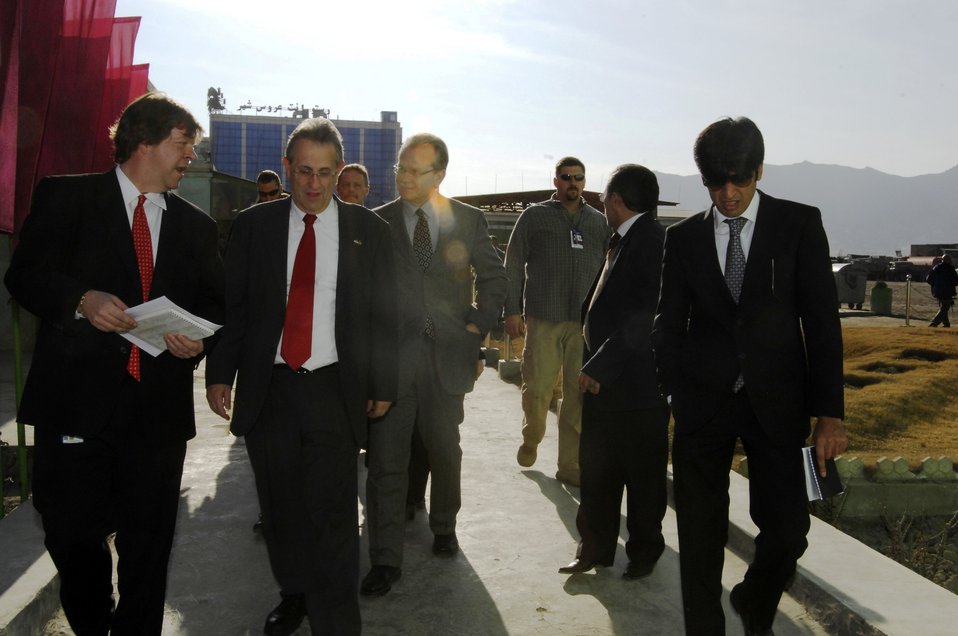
Care75 (1)